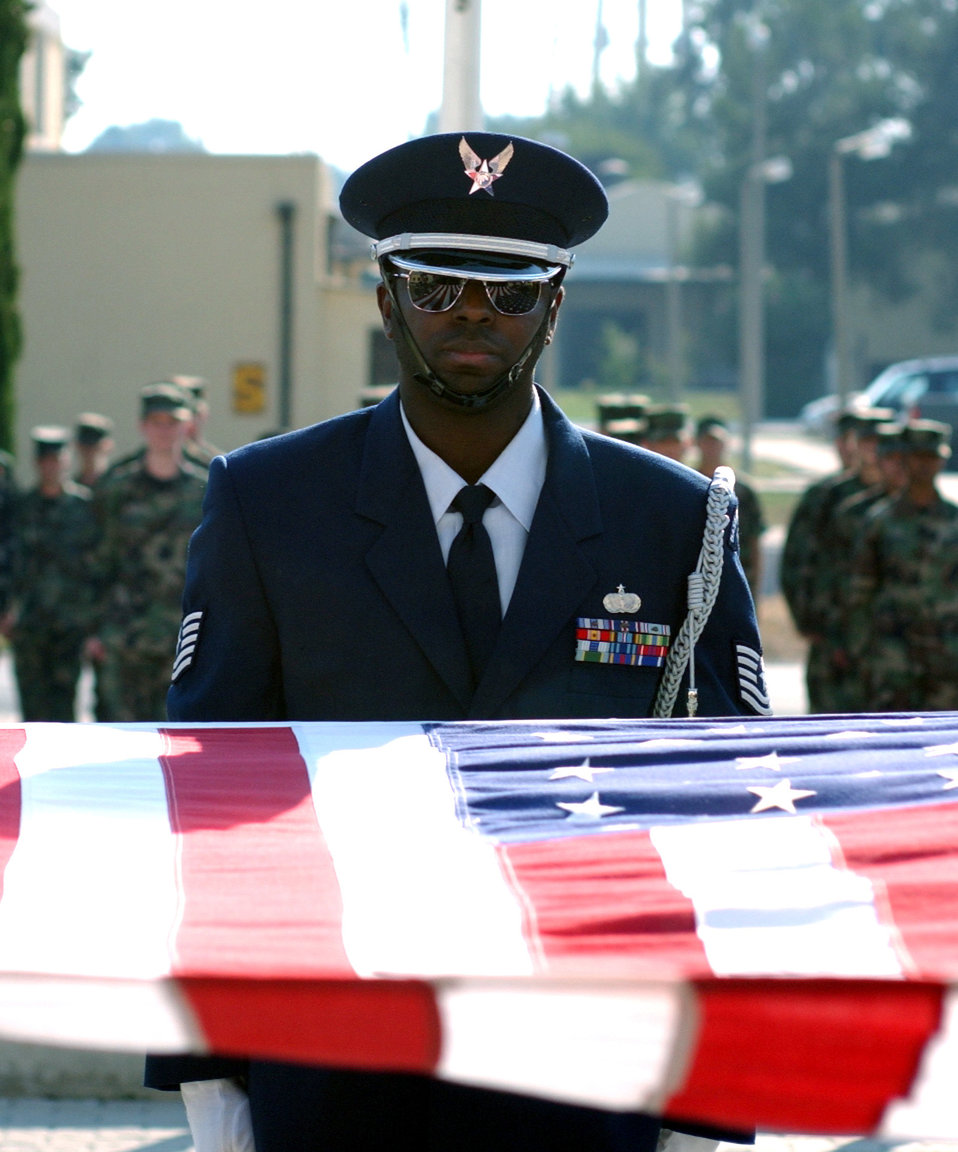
Remembering those who served

INCIRLIK AIR BASE, Turkey -- Tech. Sgt. Abdullah Mustapha looks on as members of the 39th Air Base Honor Guard fold the American flag during the Prisoners of War or Missing In Action retreat ceremony here Sept. 14. The ceremony honored the Airman, Seaman, Marines and Soldiers who were POWs MIAs during every American war since World War I.